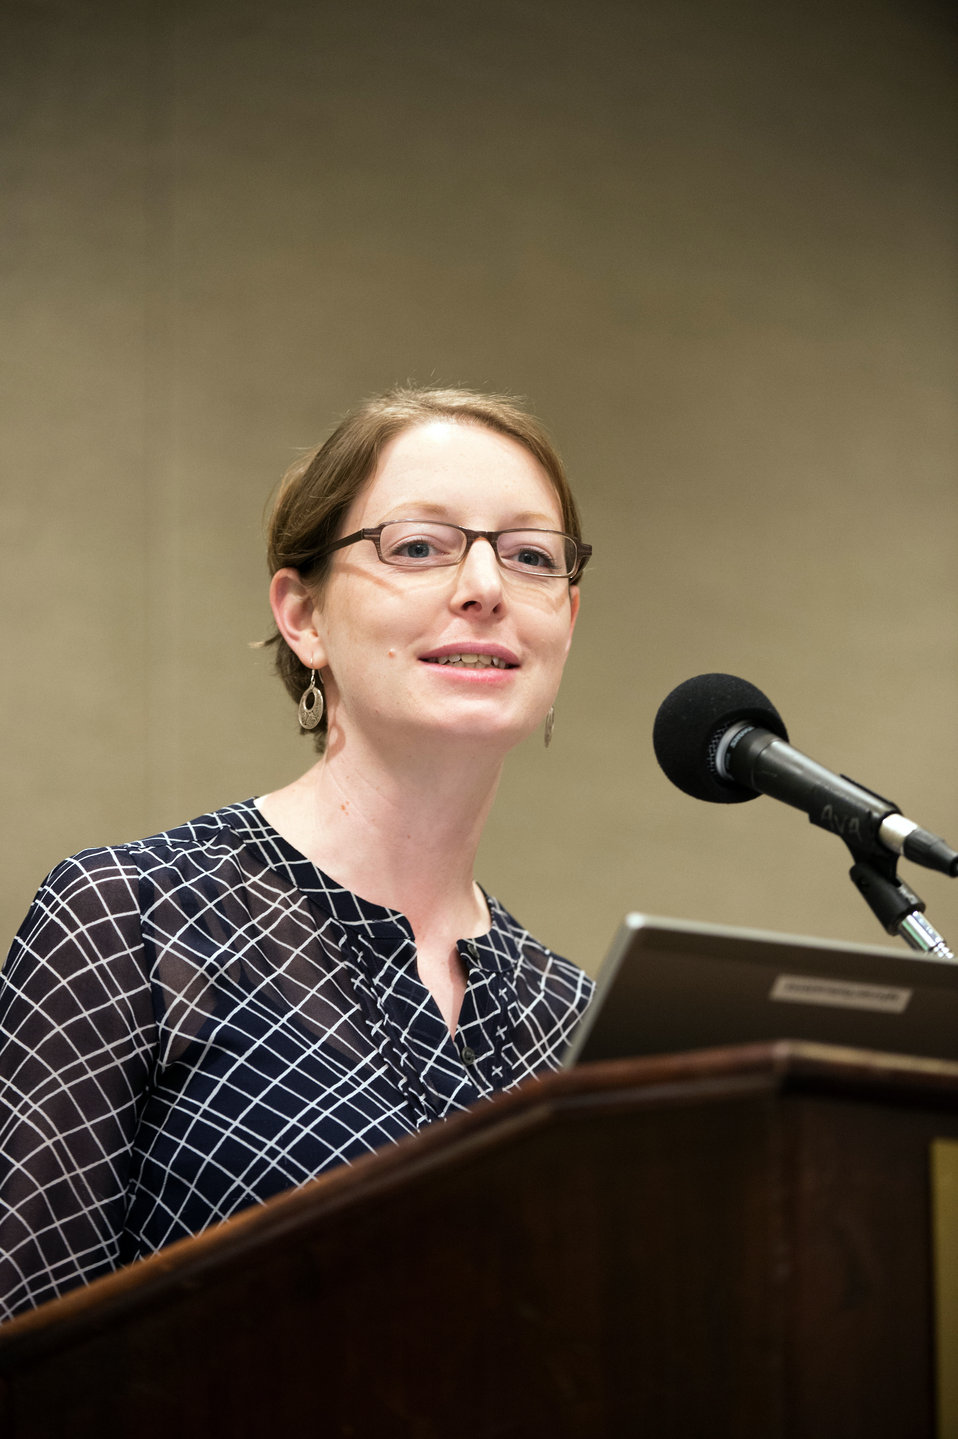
U.S. Department of Agriculture (USDA) Office of the Secretary Local and Regional Food Systems National Coordinator and Advisor Elanor Starmer speaks at the plenary panel on Know Your Farmer, Know Your Food: The Past, Present and Future at the Agricultural Outlook Forum on Friday, Feb. 21, 2014 in Arlington, VA. The panel reviewed the goals and objectives of Know Your Farmer, Know Your Food (KYF2) initiative. The panel spoke about how the initiative works; what has been accomplished to date; how local food systems can use KYF2 and other U.S. Department of Agriculture (USDA) programs to improve the supply, distribution, and demand for local foods; how KYF2 and Federal –State-local partnerships work together to promote local food production and distribution; and highlighted the initiative’s work to grow the local food economy in Appalachia. The U.S. Department of Agriculture’s (USDA) annual Agricultural Outlook Forum brings together the agricultural community to discuss policy, trade, science, rural development, and the economic outlook for the coming year. The Forum also focuses on forestry, health and nutrition issues, and the changing dynamics and face of rural America.